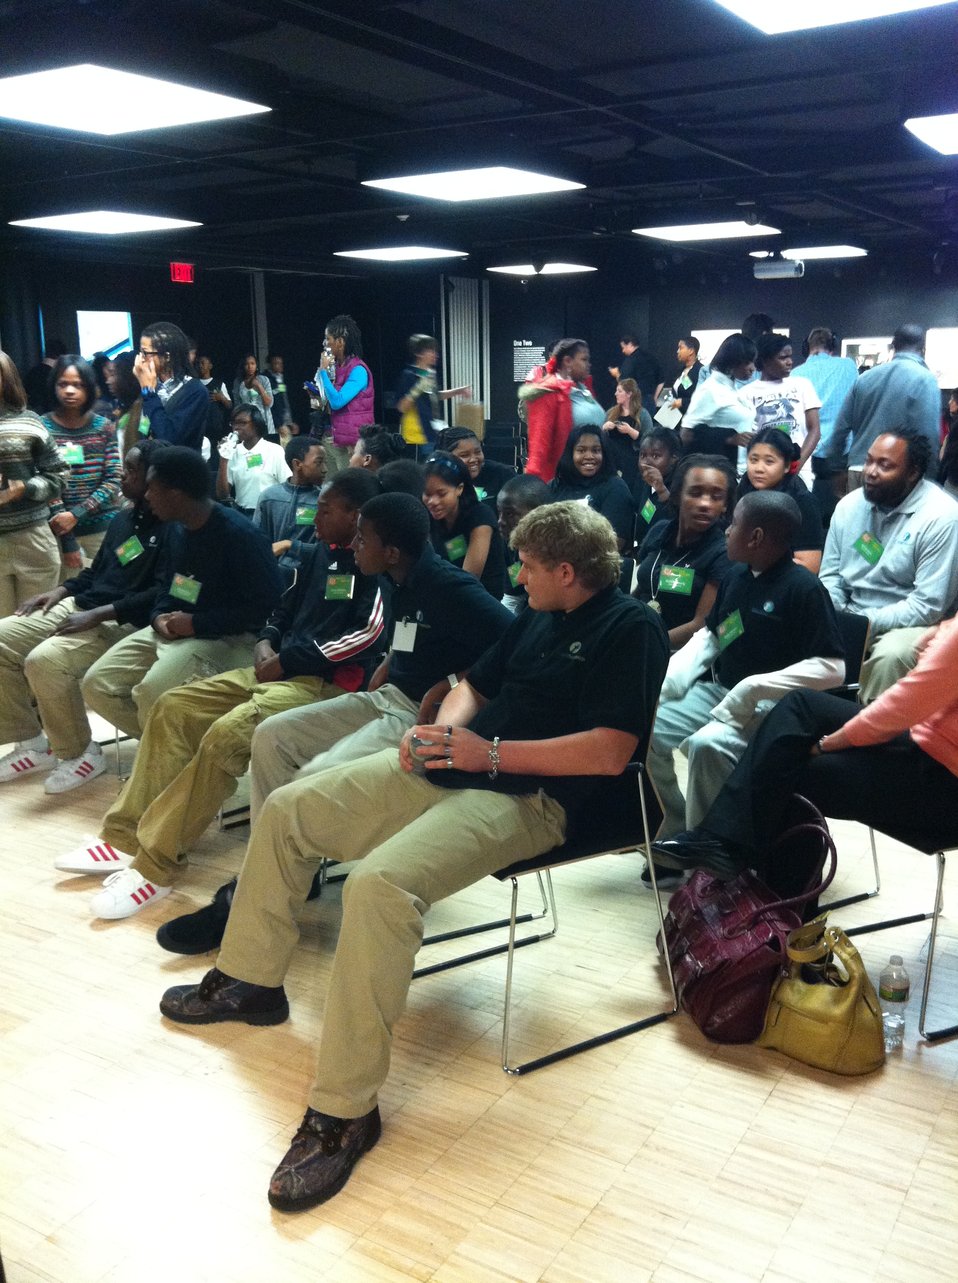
Mentor 9